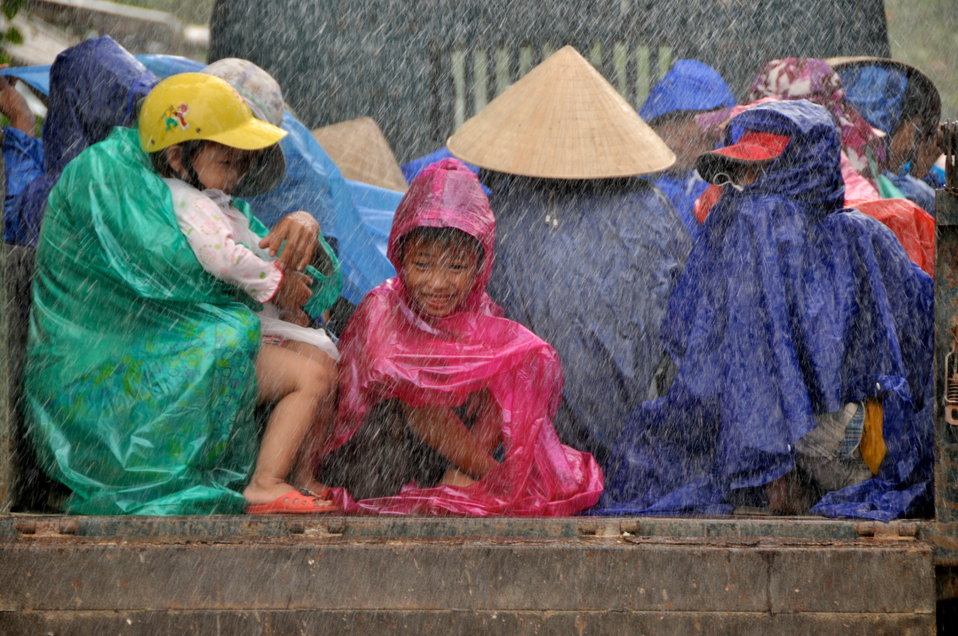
USAID and Save the Children support community evacuation drill and emergency preparedness in central Vietnam

Loc An Commune, Phu Loc District, Thua Thien Hue Province
December 4, 2012, Photo: Richard Nyberg, @USAIDVietnam